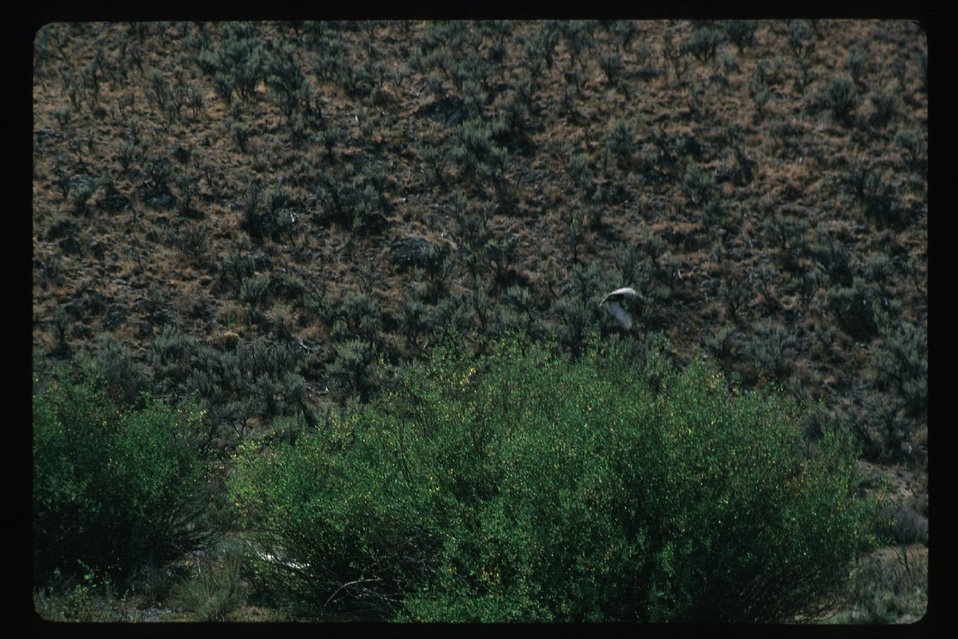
Sage Grouse in flight Wildlife LSRD Lower Snake River District